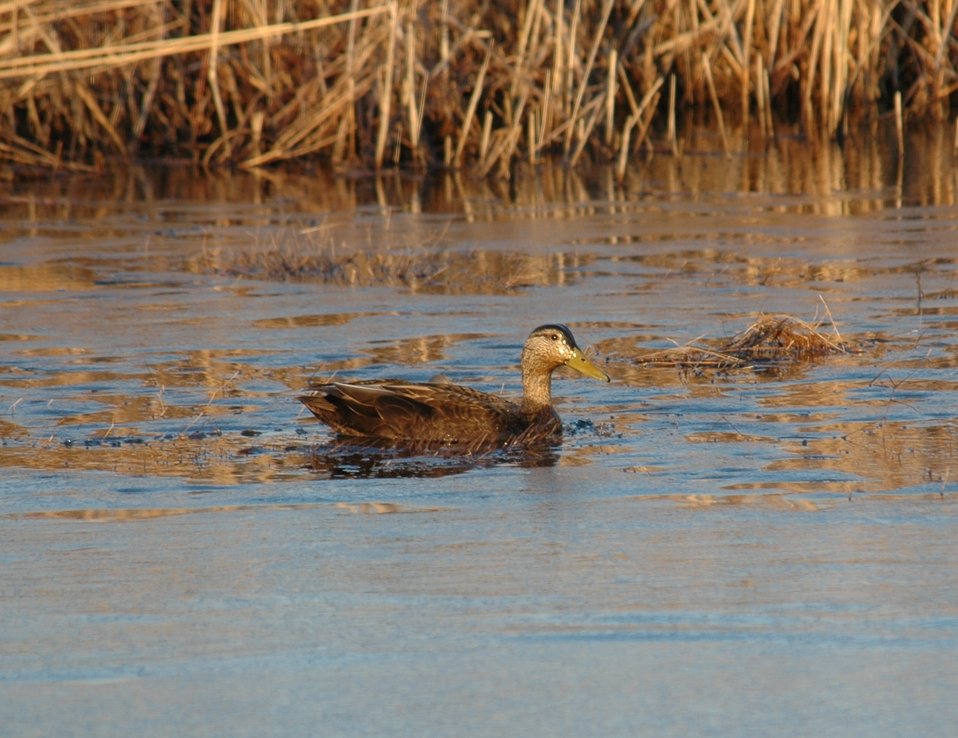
Black duck at the Edwin B. Forsythe National Wildlife Refuge.